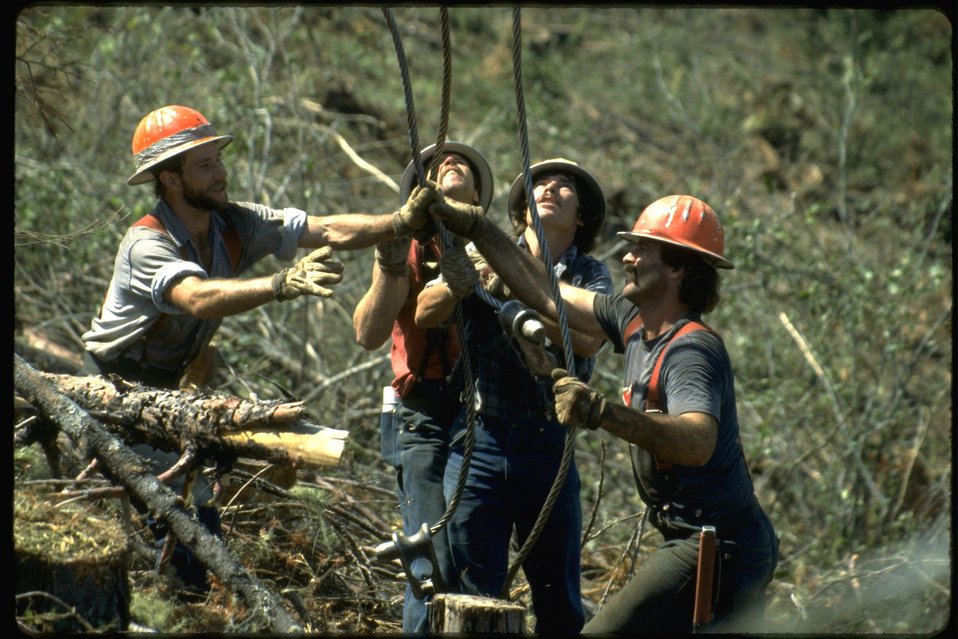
Foresters holding onto logging harness connected to crane.